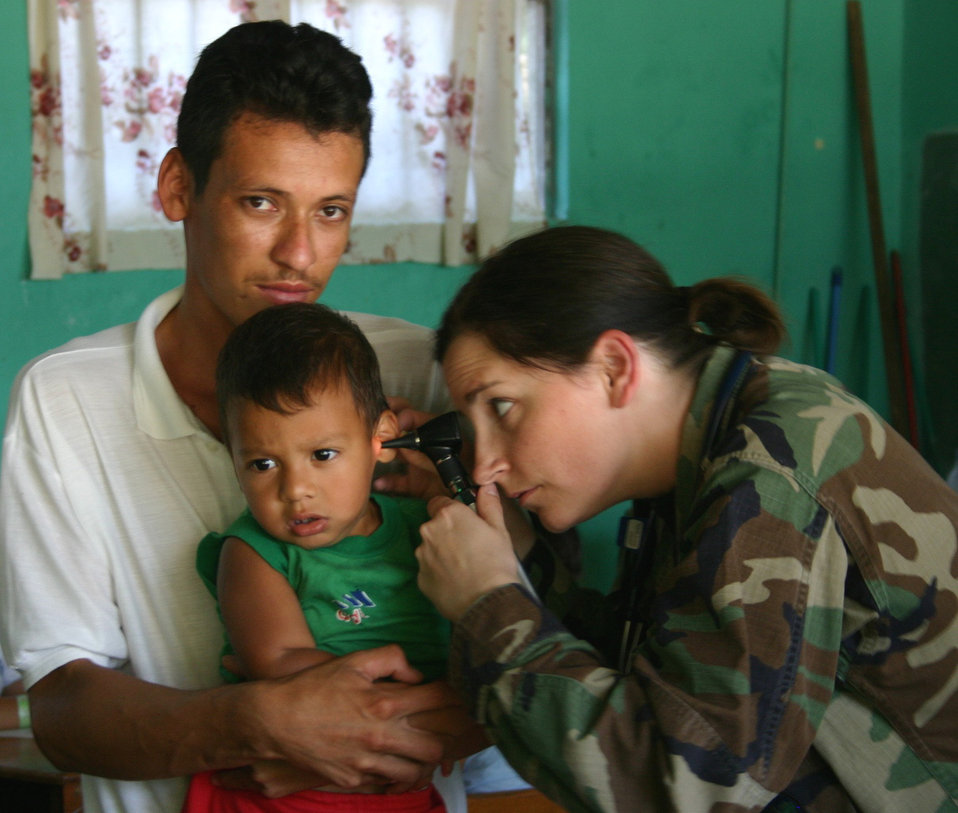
New Horizons 2006-Honduras

A man holds his son as Maj. (Dr.) Jamie Glover, a family practice physician from the 96th Medical Operations Squadron at Eglin Air Force Base, Fla., examines the boy's ear. A team of medics are conducting the two-week medical readiness training exercise, or MEDRETE, in association with the New Horizons 2006-Honduras exercise.